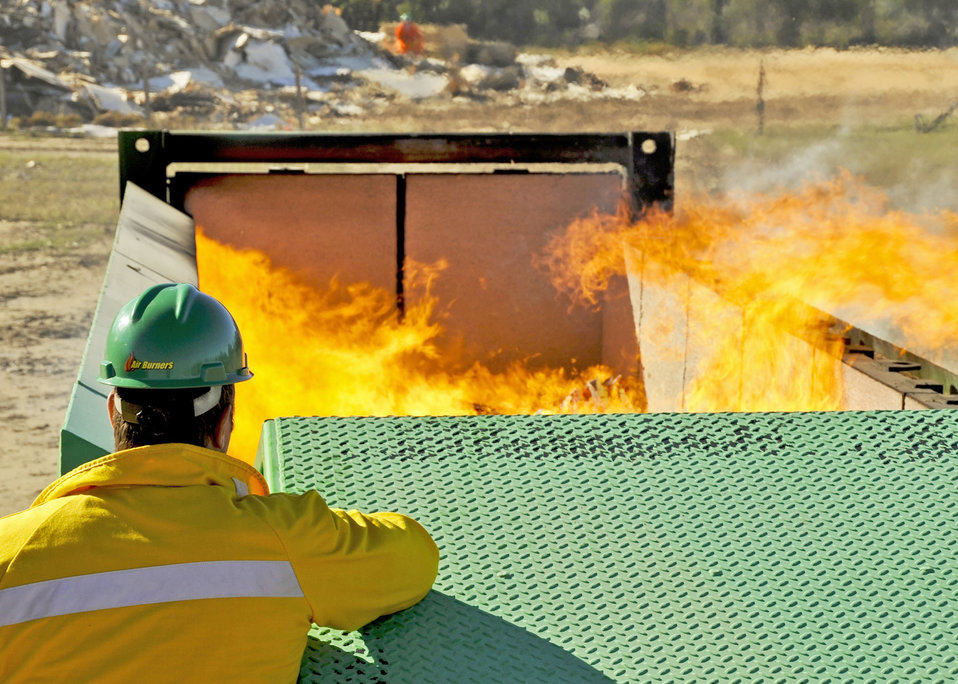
Air burners at Eglin

Matt O'Conner monitors the flame height of the 46th Test Wing's new air curtain incinerator Oct. 31, 2010, at Eglin Air Force Base, Fla. Air Burners personnel were on hand during the burner's test run to ensure the new equipment worked properly and trained base personnel on how to use it. Mr. O'Conner is a sales manager with Air Burners.